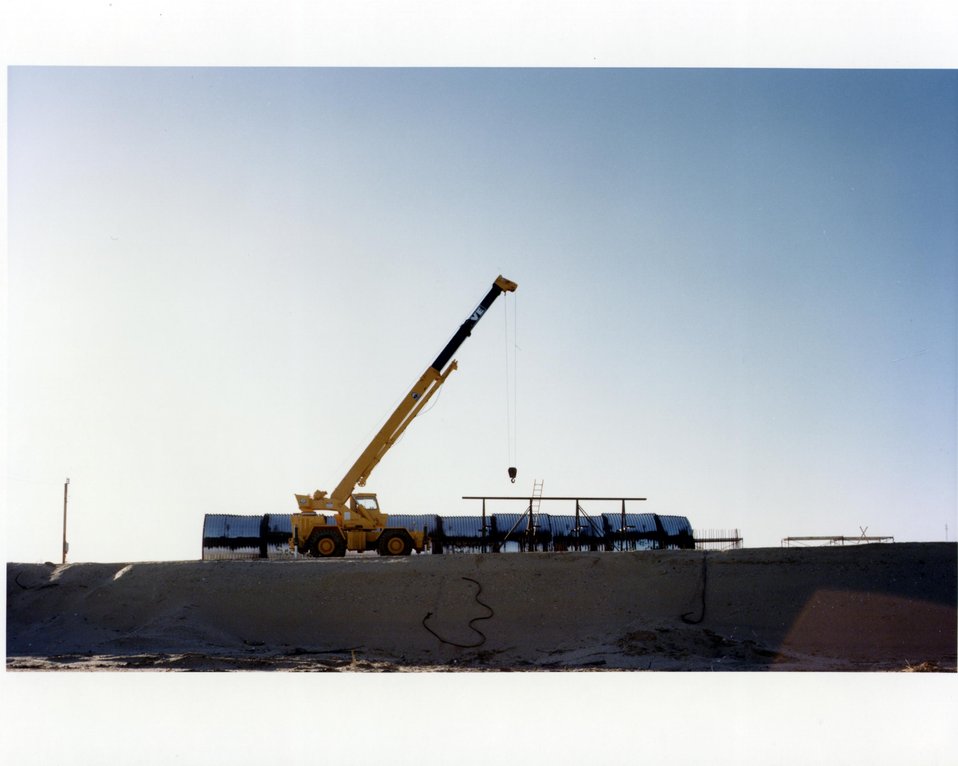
CBA, A PROTON-PROTON COLLIDING BEAM ACCELERATOR TO STUDY THE BASIC STRUCTURE OF ENERGY AND MATTER, IS BEING BUILT ON THE NORTHWEST QUADRANT OF THE 5,250 ACRE BROOKHAVEN SITE. THE FACILITY ITSELF IS AN UNDERGROUND CIRCULAR TUNNEL, WHICH IS 3.8 KILOMETERS IN CIRCUMFERENCE. TWO RINGS OF SUPERCONDUCTING MAGNETS WILL BE INSIDE THE TUNNEL. PROTON BEAMS WILL BE INJECTED INTO THE TUNNEL AND ACCELERATED TO ENERGIES UP TO 400 GEV. AT SIX PLACES ALONG THE TUNNEL, THE BEAMS WILL COLLIDE. EXPERI- MENTAL HALLS, WHICH ENCLOSE THESE SIX INTERSECTIONS, WILL HOUSE EQUIPMENT FOR STUDYING THE RESULTS OF THE COLLISIONS.